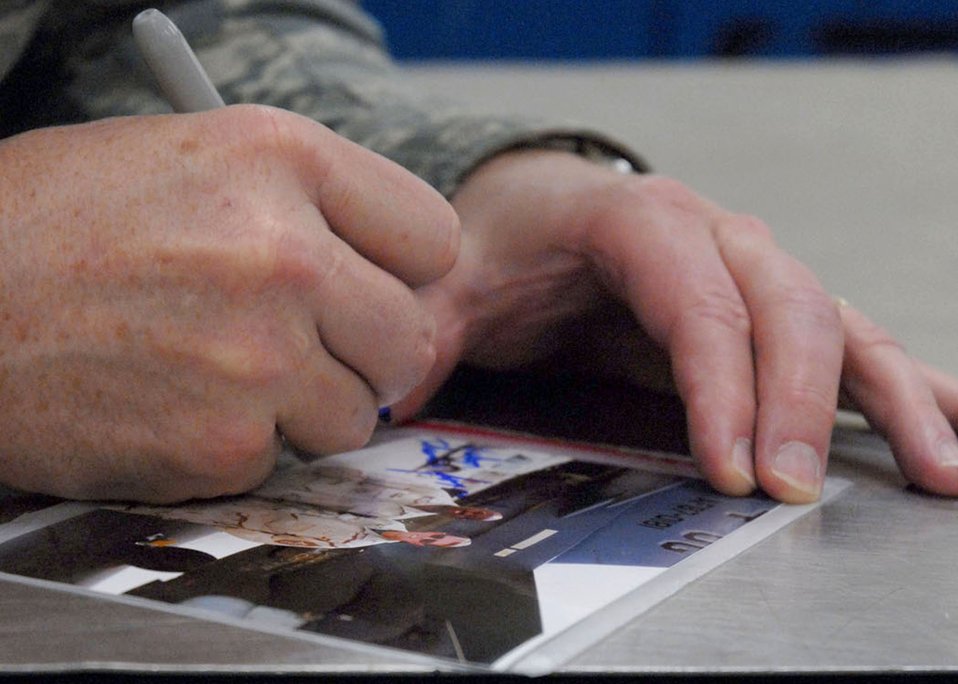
Chief master sergeant of the Air Force visits Kunsan Airmen

Chief Master Sgt. of the Air Force Rodney J. McKinley signs a photograph during his March 24 visit to Kunsan Air Base, South Korea.